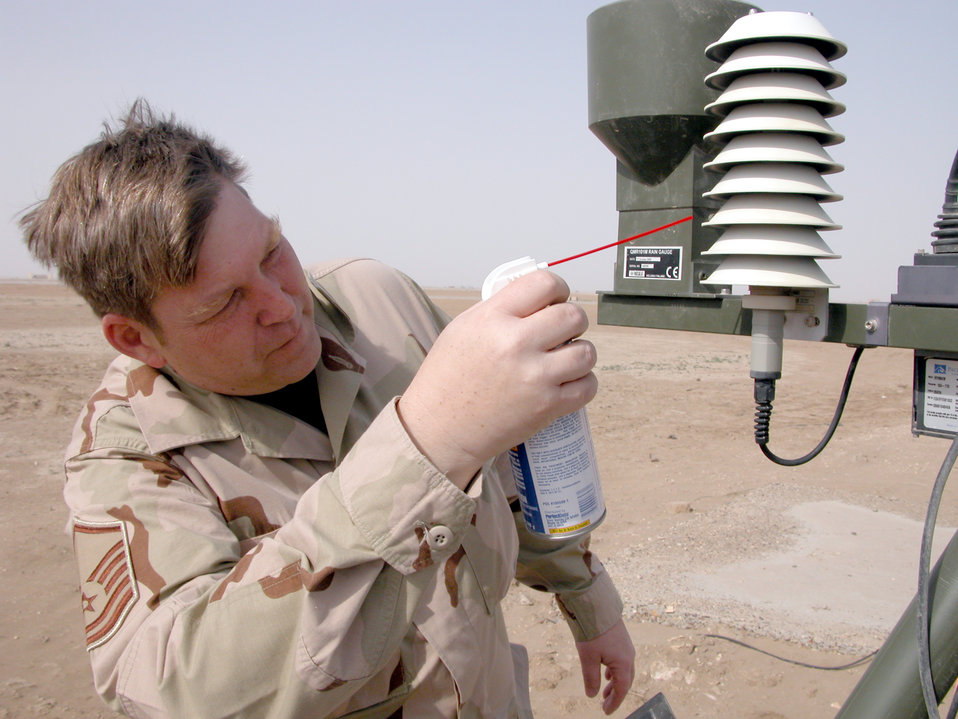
Spring cleaning

TALLIL AIR BASE, Iraq (AFPN) -- Master Sgt. Richard Blume sprays compressed air on an automated weather station to remove dust from the equipment. Sergeant Blume is the base's weather flight superintendent and is deployed here from Moody Air Force Base, Ga.